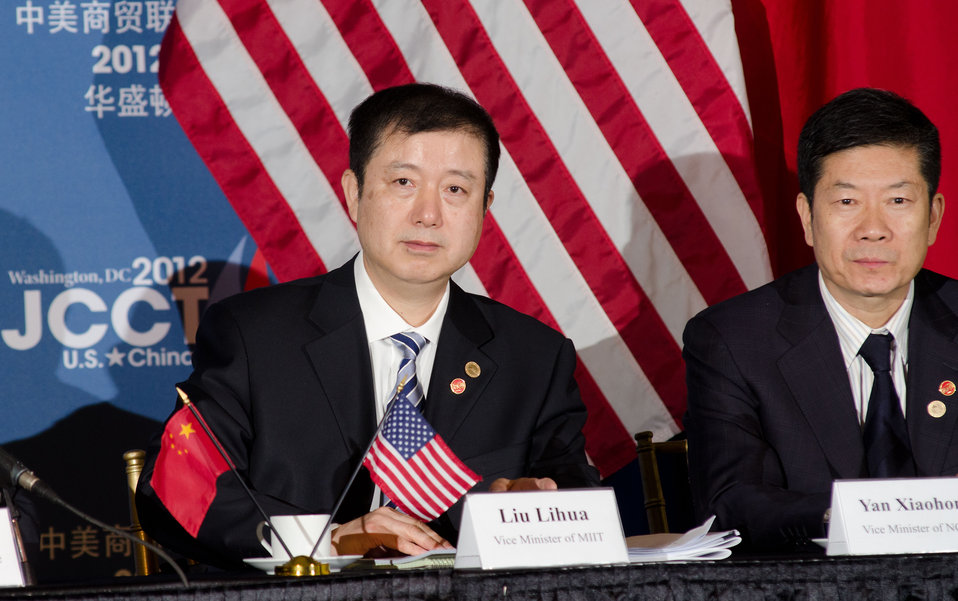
China's Vice Minister of Industry and Information Technology (MIIT) Liu Lihua, and Vice Minister of National Copyright Administration of China (NCAC) Yan Xiaohong listen to a question from international news media journalists at the 23rd Session of the U.S. China Joint Commission on Commerce and Trade (JCCT) press conference, at the Andrew W. Mellon Auditorium, Wednesday, December 19, 2012, in Washington, D.C.

The JCCT holds high-level plenary meetings on an annual basis to review progress made by working groups that focus on a wide variety of trade issues. These working groups meet throughout the year to address topics such as intellectual property rights, agriculture, pharmaceuticals and medical devices, information technology, tourism, commercial law, environment, and statistics.

Established in 1983, the JCCT is the main forum for addressing bilateral trade issues and promoting commercial opportunities between the United States and China. The2011 JCCT meeting was held in Chengdu, China, where China agreed, among other issues, to improve intellectual property enforcement, delink innovation policies to government procurement preferences, and provide a fair and level playing field in China’s Strategic Emerging Industries.